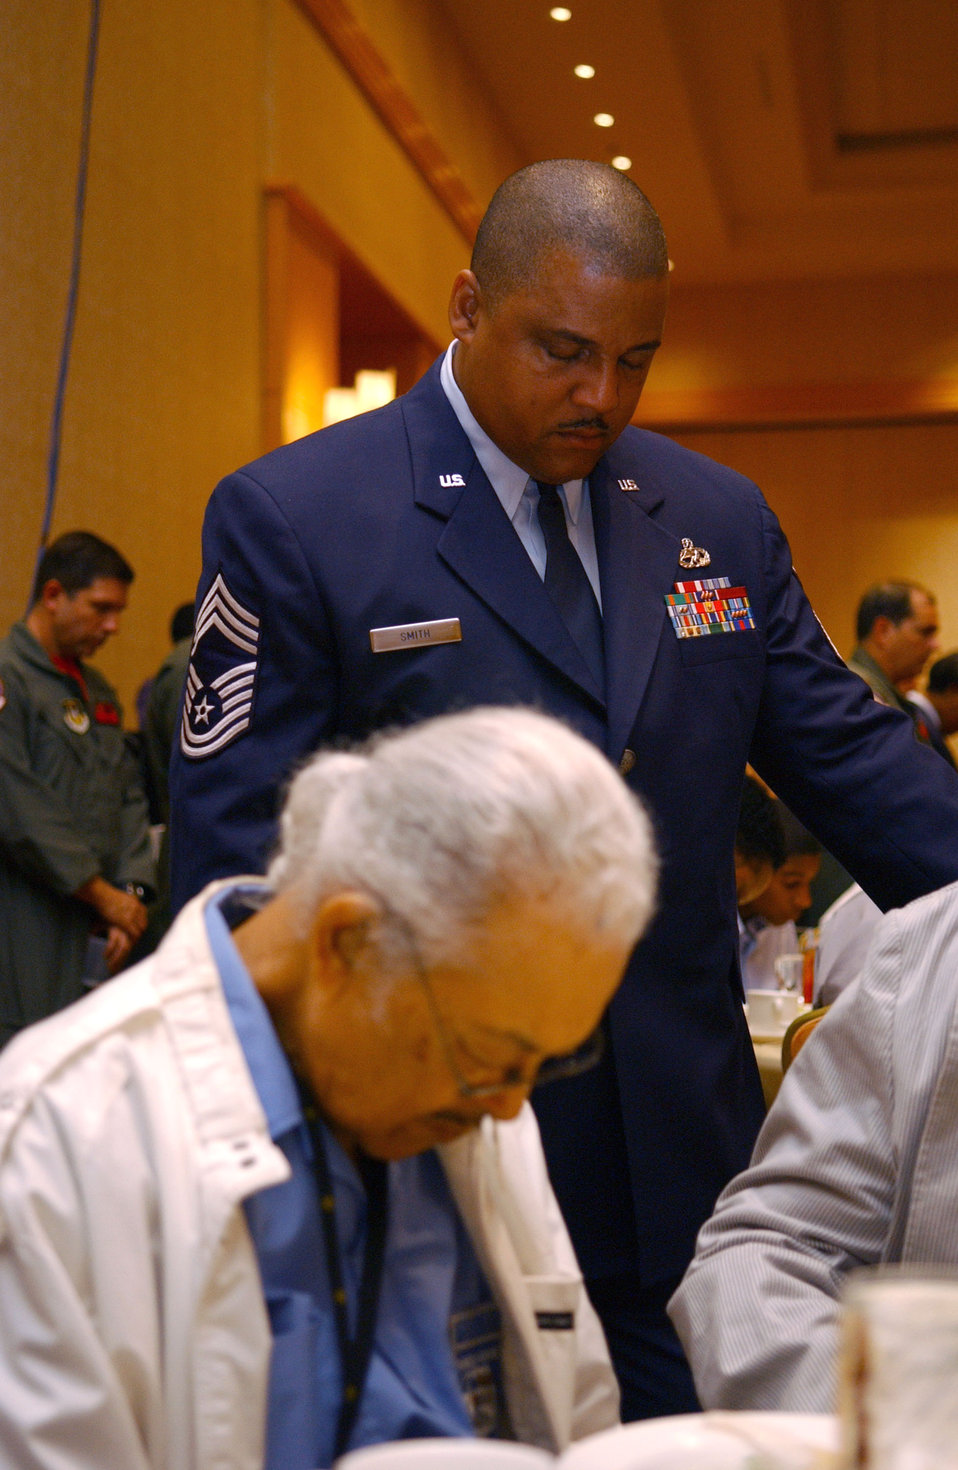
Tuskegee Airmen

Chief Master Sgt. Joseph Smith and Tuskegee Airman Bill Thompson bow their heads during an invocation at a luncheon in Phoenix on Aug. 3. The event was part of the Tuskegee Airmen, Inc., 35th Annual National Convention. The organization exposes minority youth to aviation and aerospace technology. Chief Smith is with the 445th Maintenance Squadron at Wright-Patterson Air Force Base, Ohio. Mr. Thompson was a gunner with the 477th Bomb Group.